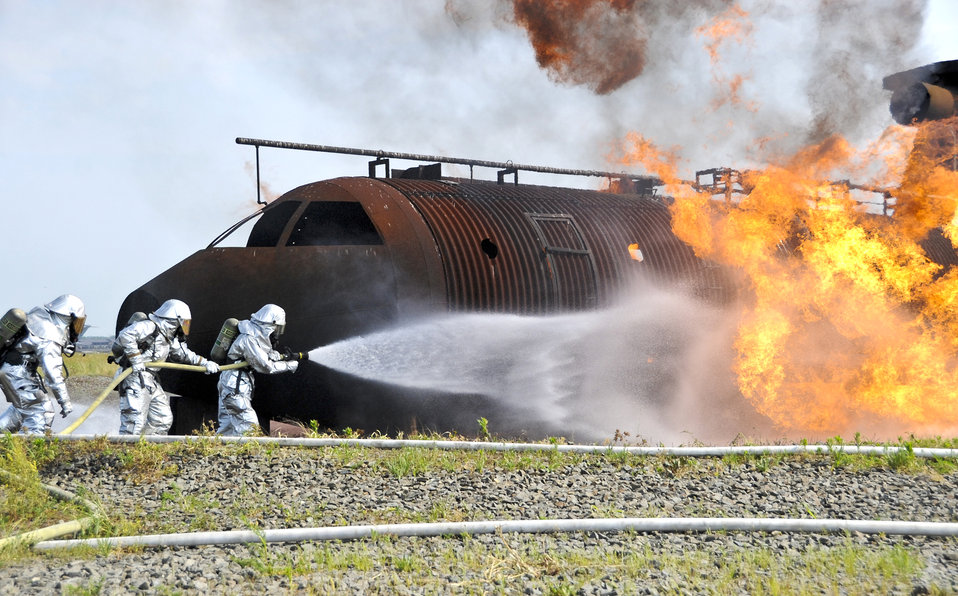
Firefighter training

Airmen and Marines battle fire surrounding a mock aircraft frame June 10, 2011, during a joint firefighting course at Joint Base McGuire-Dix-Lakehurst, N.J.